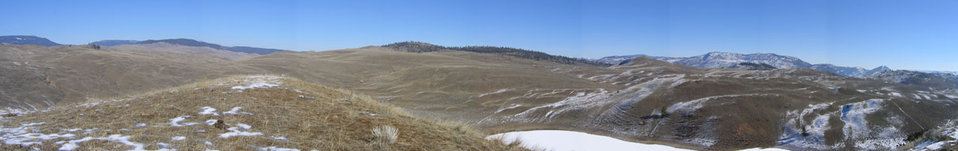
Lac du bois grasslands

Panorama of lac du bois grasslands including red hill near kamloops, bc.